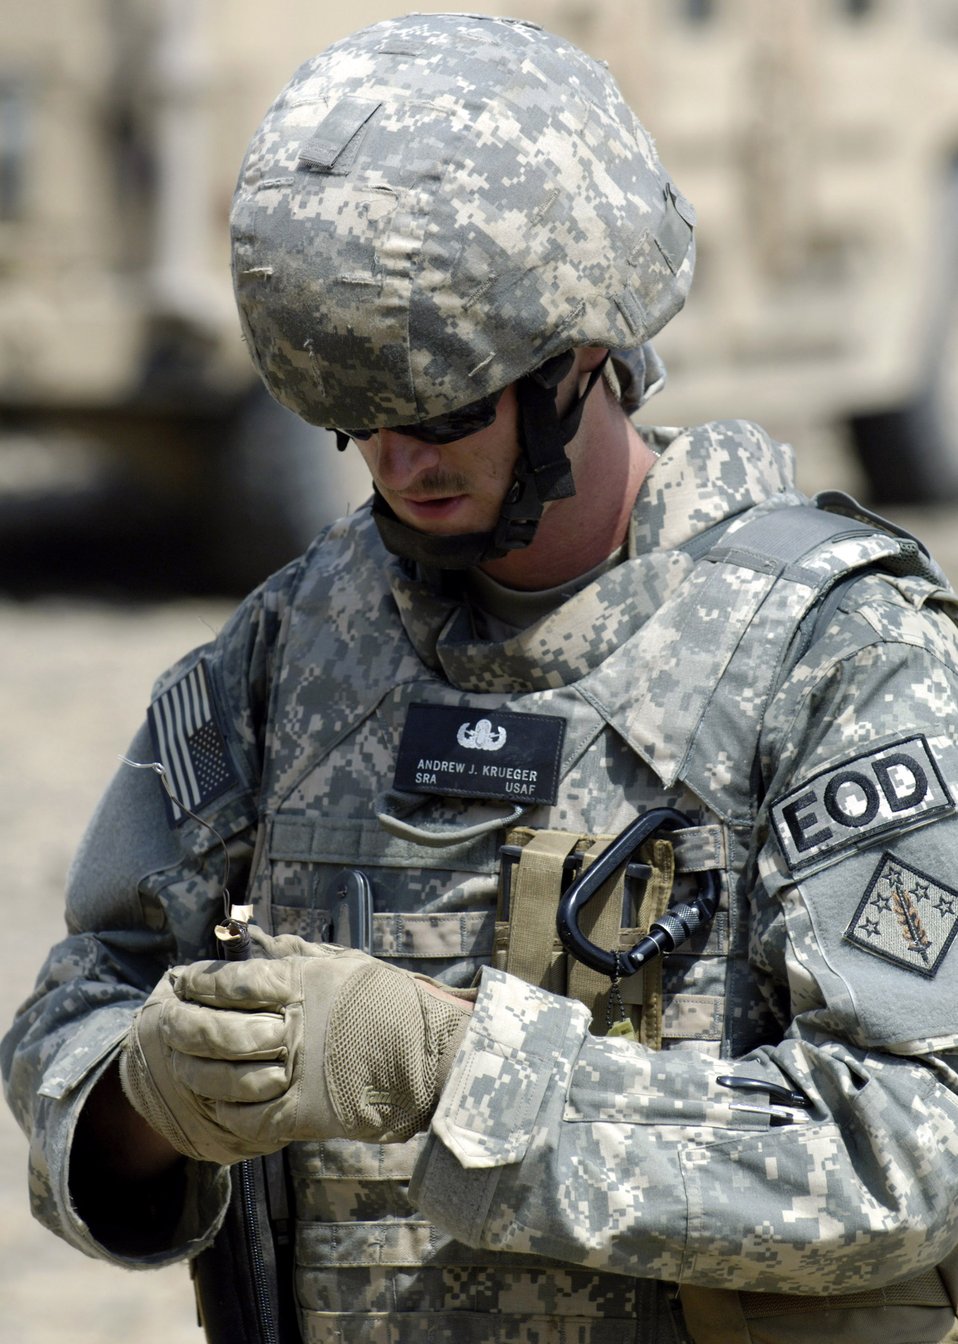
Small rewards program results in big explosion

Senior Airman Andrew Krueger prepares to push the button that will set off a controlled detonation Sept. 1 in Afghanistan. Approximately 900 pounds of small arms ammunition, rocket propelled grenades and mortars were turned in by provincial citizens under the small arms for rewards program. Airman Krueger is an explosive ordnance specialist assigned to Forward Operating Base Mehtar Lam, Afghanistan.